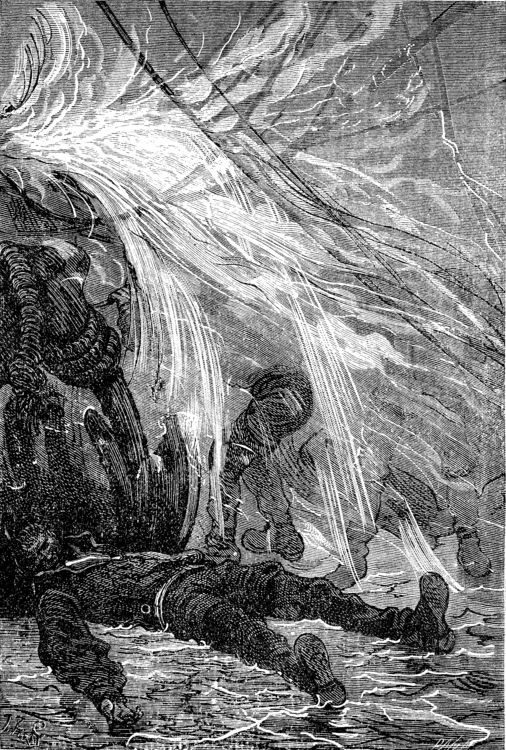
An illustration from Jules Verne's novel 'A Floating City' (1869) drawn by Jules Férat. Polski: Ilustracja powieści Juliusza Verne'a 'Pływające miasto' (1869) autorstwa Julesa Férata. Français : Jules Verne: 'Une Ville flottante' (1869), dessins par Jules Férat. Orginal text: Français : Un des matelots étendu sans connaissance.